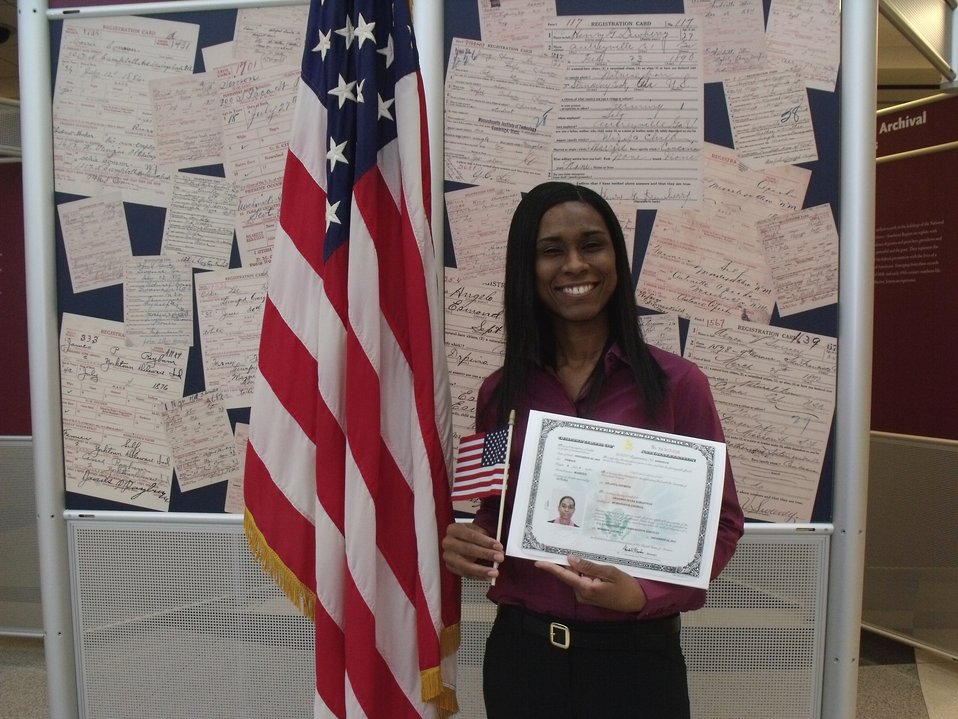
New Citizens